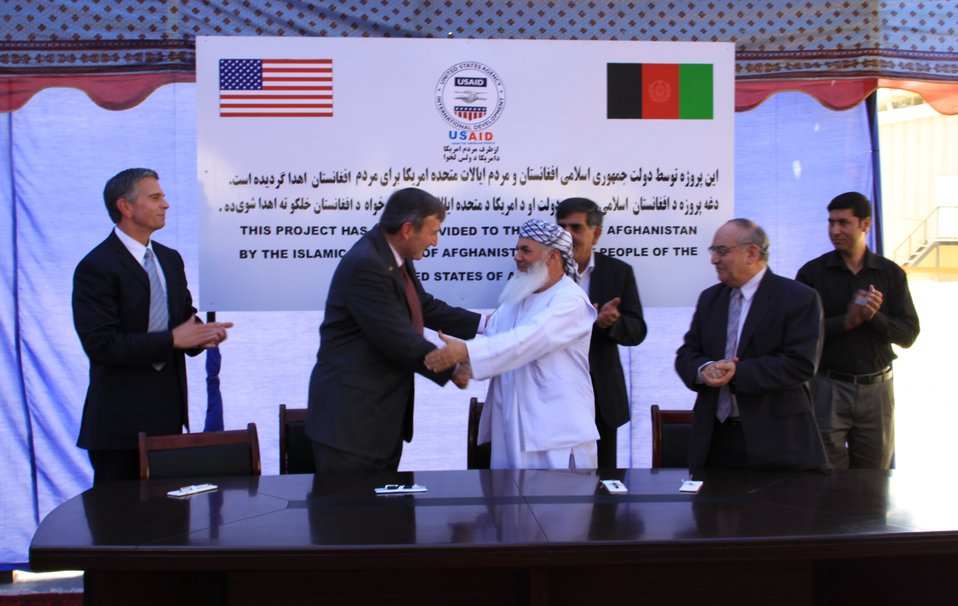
105 MW Tarakhil Power Plant Handover